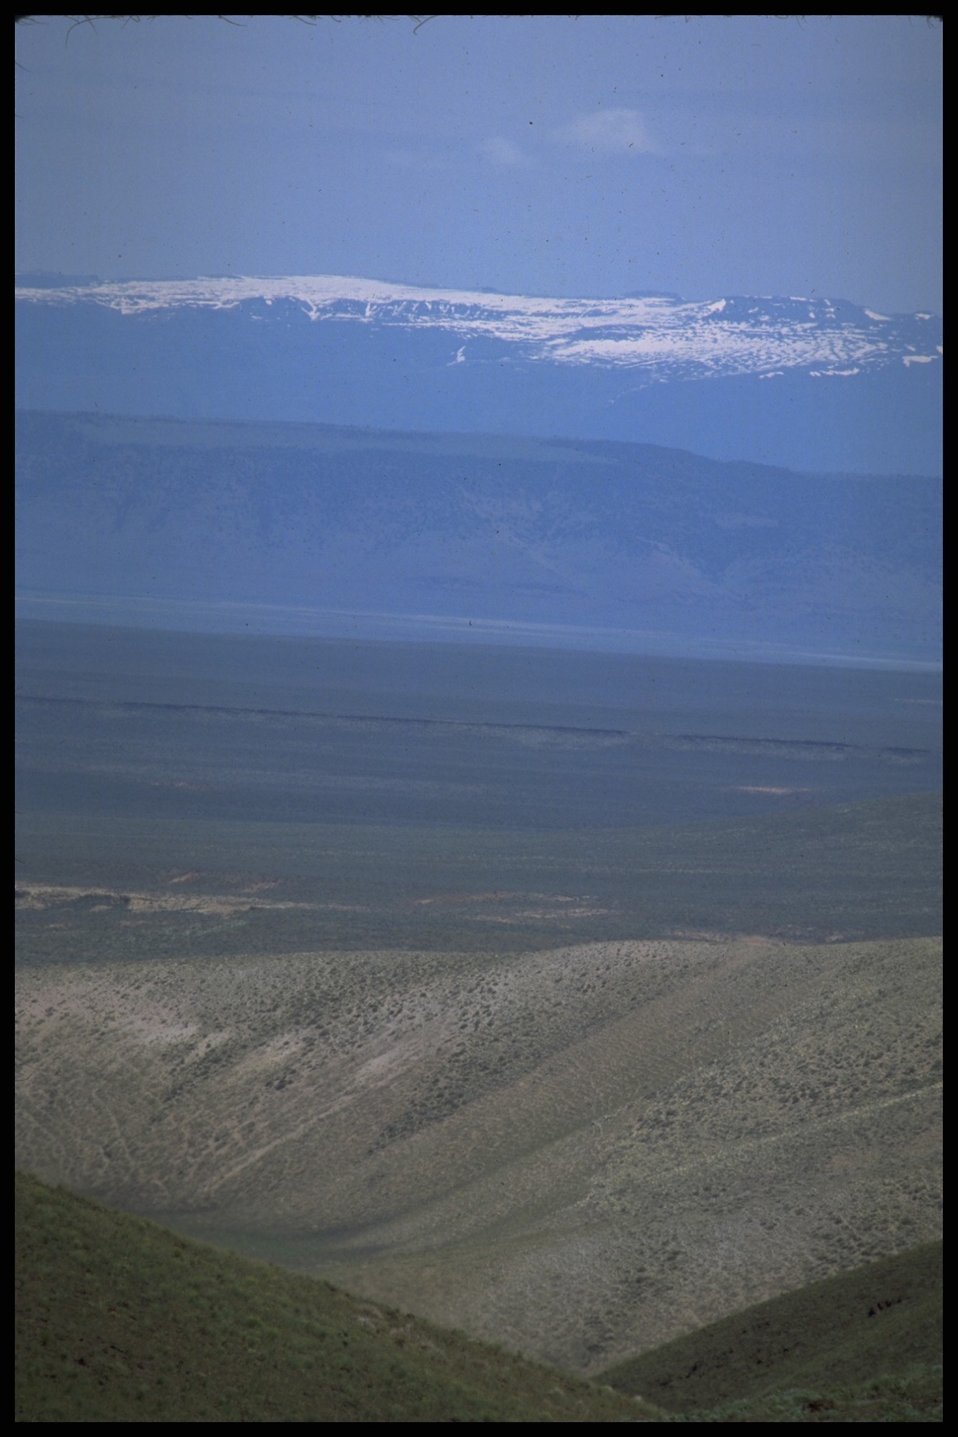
Distant view of Steens mountain. Lakeview District.